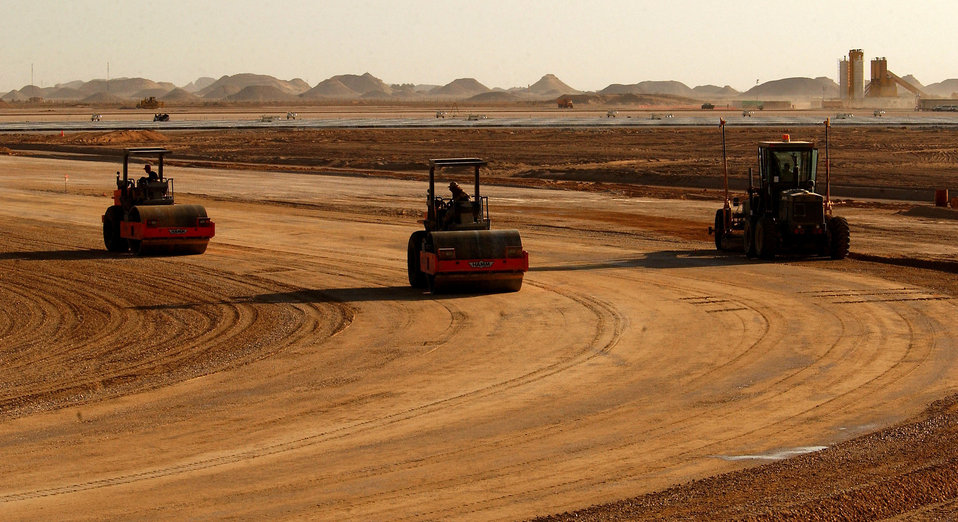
Ground pounders

OPERATION ENDURING FREEDOM (AFPN) -- Air Force heavy equipment operators from the 823rd Red Horse Squadron compact gravel while building a taxiway at a forward-deployed location. Squadron airmen are working around-the-clock to build a taxiway and support ramps more than a mile long to increase capacity for heavy aircraft.